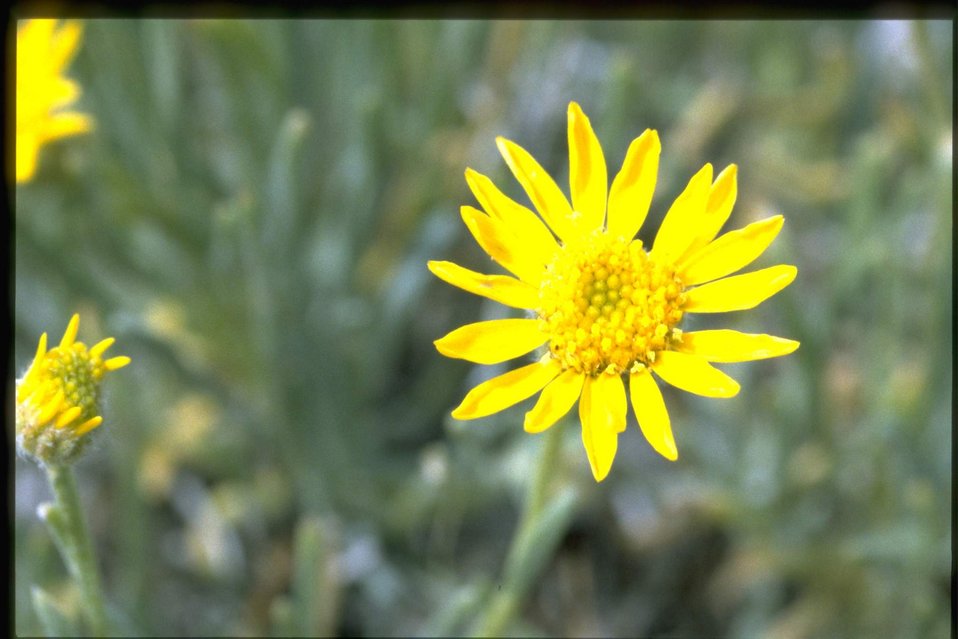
Closeup shot of arrowleaf balsamroot wildflower.